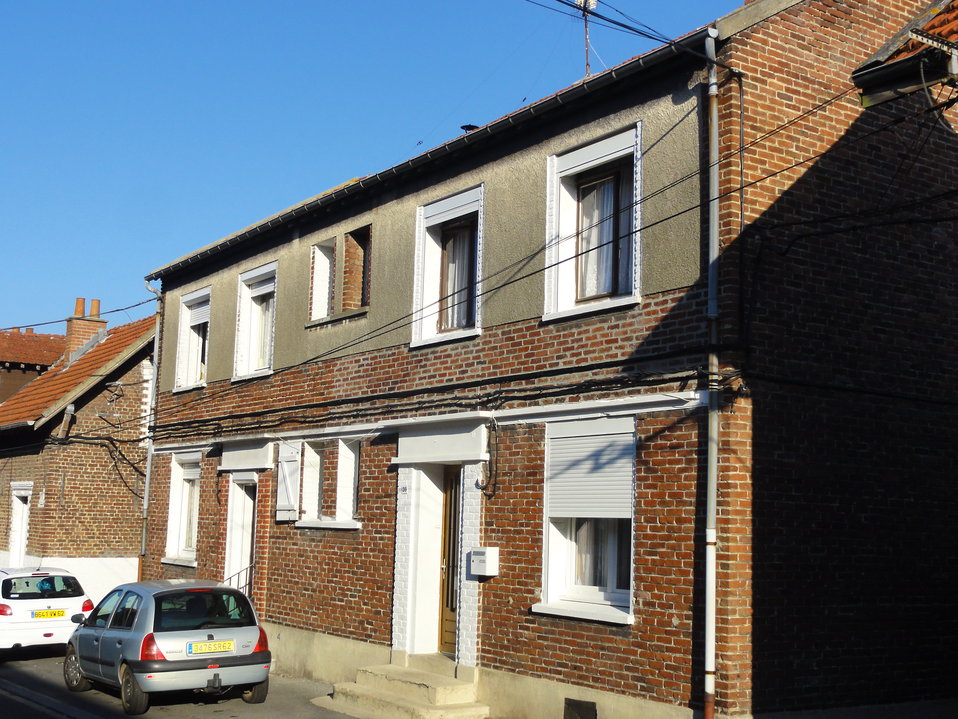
Fran√ßais†: Cit√©s de la Fosse n¬∞ 6 bis - 6 ter de la Compagnie des mines de Marles, Calonne-Ricouart, Pas-de-Calais, Nord-Pas-de-Calais, France.